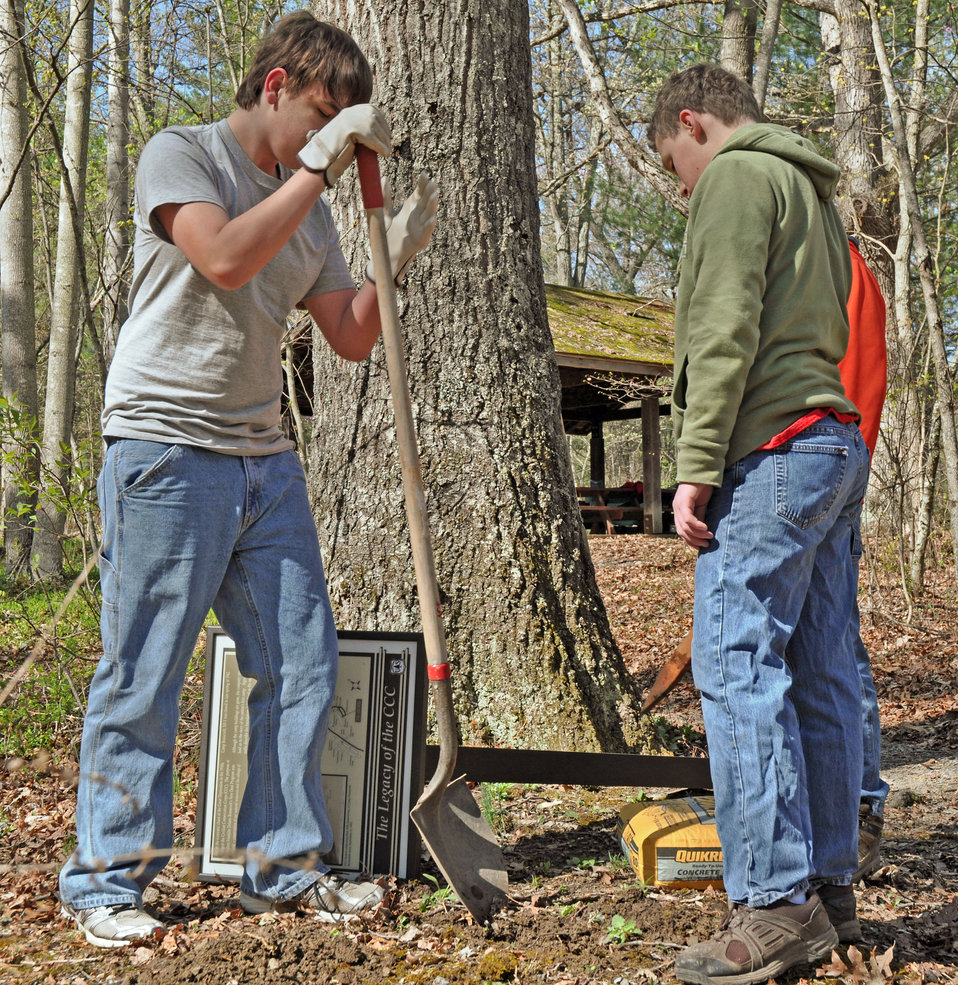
CCC2-a

Scouts from Boy Scouts of America Troop 88 dig a hole for a new interpretative sign in the George Washington and Jefferson National Forest in Virginia on Apr. 20, 2013. The first Civilian Conservation Corps (CCC) camp, Camp Roosevelt, was established in April 17, 1933 at the George Washington and Jefferson National Forest in Virginia.